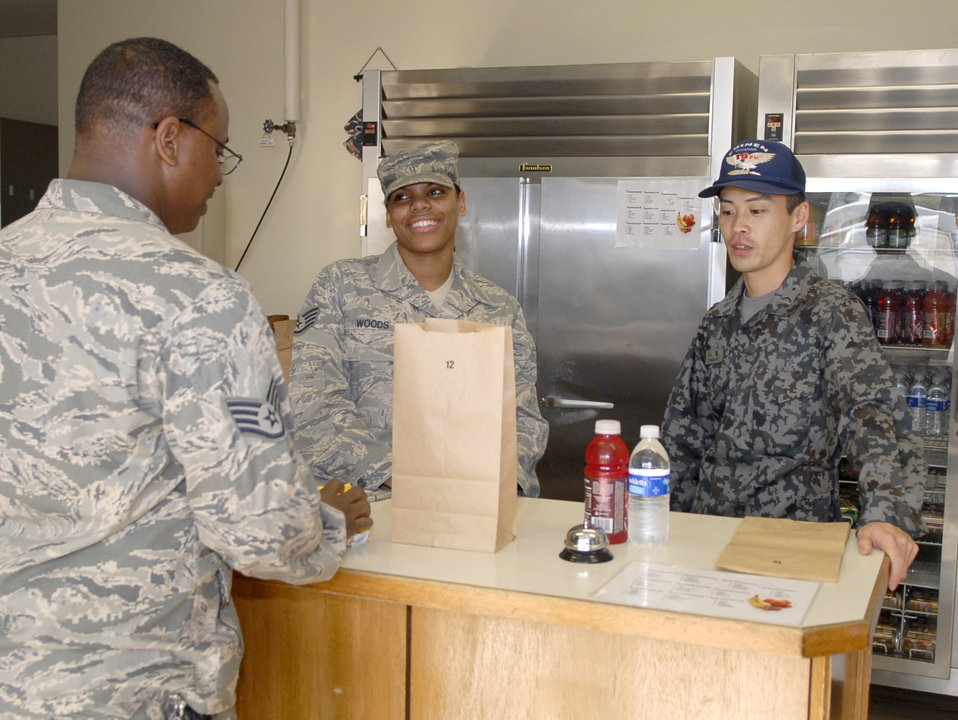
Japanese, American NCOs work together to gain insight

Staff Sgt. Talandra Woods and Japanese Air Self Defense Force Staff Sgt. Naoki Yamane prepare an order for a customer Feb. 23, 2011, at Kadena Air Base, Japan. Sergeant Woods and Sergeant Yamane participated in an NCO exchange program to learn more about how each other operates in their workcenters. Sergeant Woods is the NCO in charge of the Johnson Dining Facility at Kadena AB. Sergeant Yamane is a JASDF food service specialist.